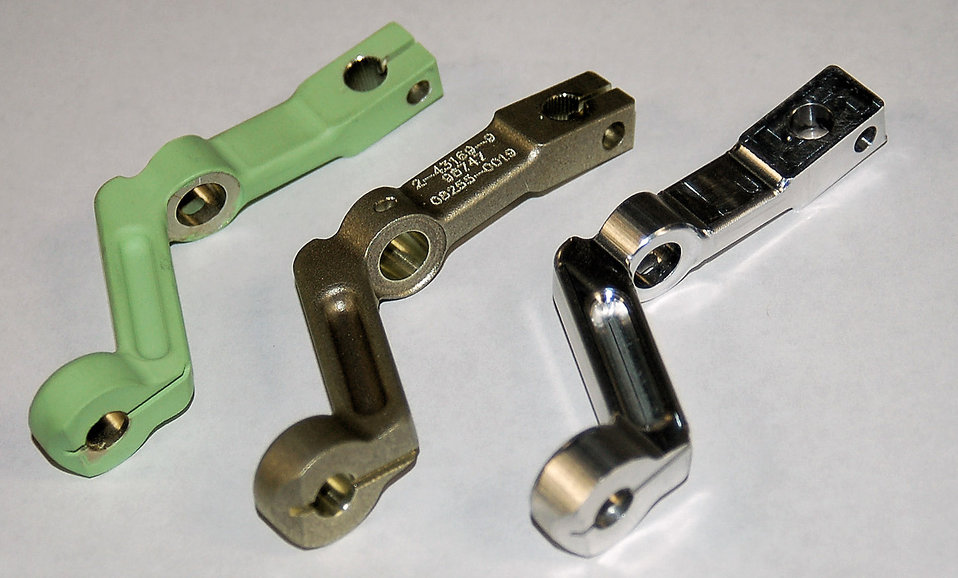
Talons get new aileron levers

The three steps in the manufacturing process of T-38 aileron levers are shown: first, the part is custom cut (right), then numbered and textured (center), and finally painted green and shipped to the customer.